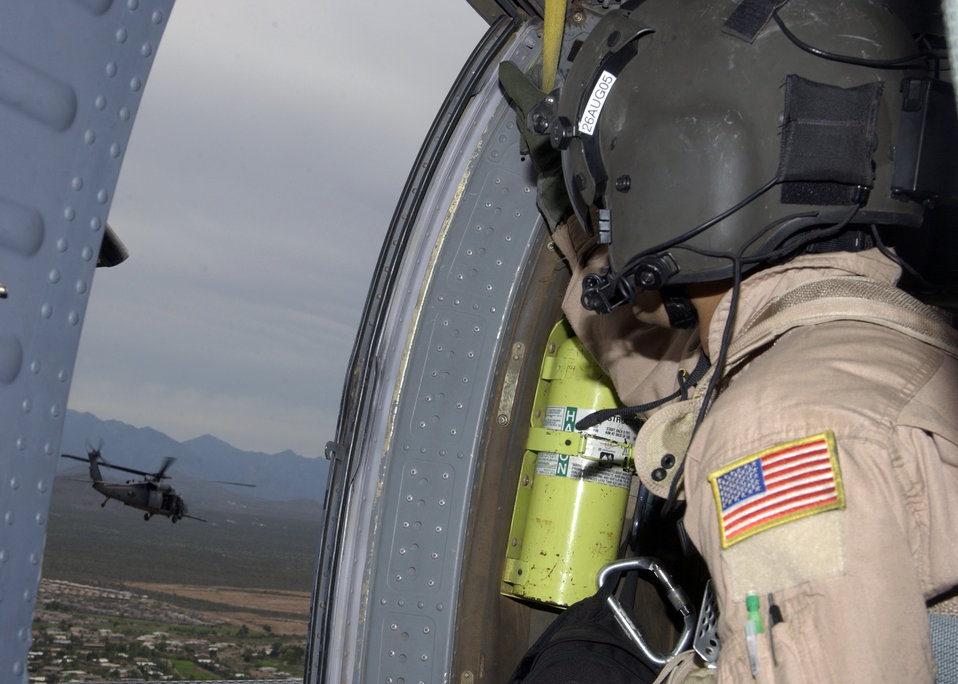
Readying for a rescue

DAVIS-MONTHAN AIR FORCE BASE, Ariz. -- Staff Sgt. Chris Morford looks out the gunner's window of an HH-60G Pave Hawk to ensure a safe flight pattern between the two helicopters. Sergeant Morford is assigned to the 55th Rescue Squadron here.